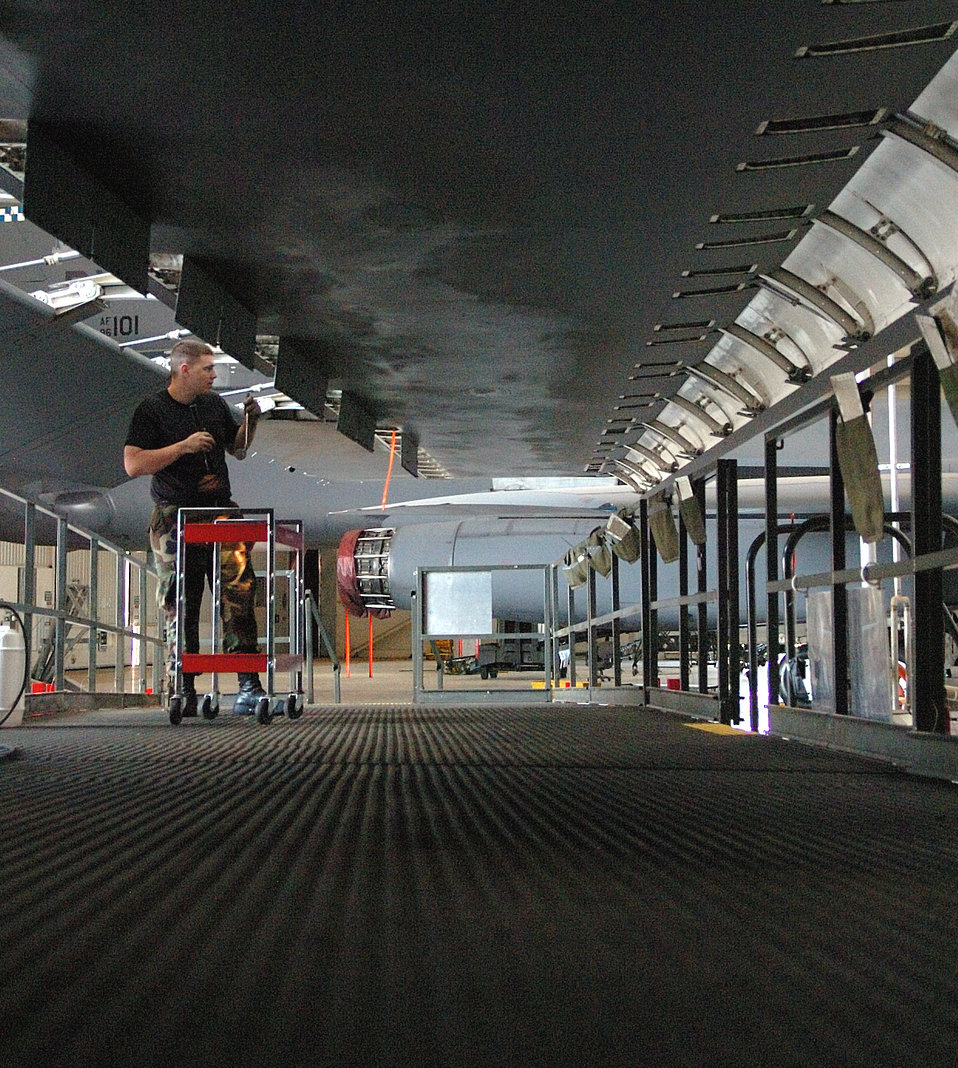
'Bone' makes evolving mark on war on terrorism

Airman 1st Class Aaron Gill performs a preventative maintenance inspection Sept. 13 on a B-1 Lancer at Dyess Air Force Base, Texas. An inspection on the bomber is required after every 600 hours of flying time. Airman Gill is a member of the 9th Bomb Squadron.